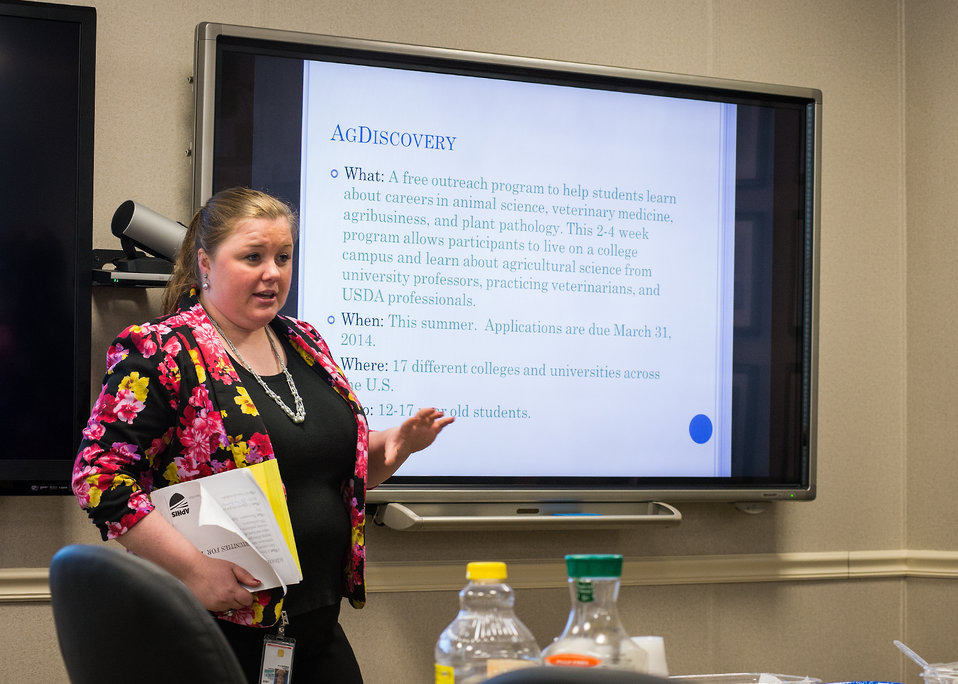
Kimberly Hardy discussed the educational opportunities available with the Animal and Plant Health Inspection Service AGDiscovery program with students from Thomas Jefferson High School of Science and Technology in Alexandria, VA during the U.S. Department of Agriculture (USDA), Office of the Chief Information Officer (OCIO) IT Job Shadow Day, Tuesday, Mar. 25, 2014. The OCIO IT Job Shadow Day hosts students from local high schools in the Washington, D.C. area annually with IT professionals and agricultural specialists from a variety of mission areas atUSDA.